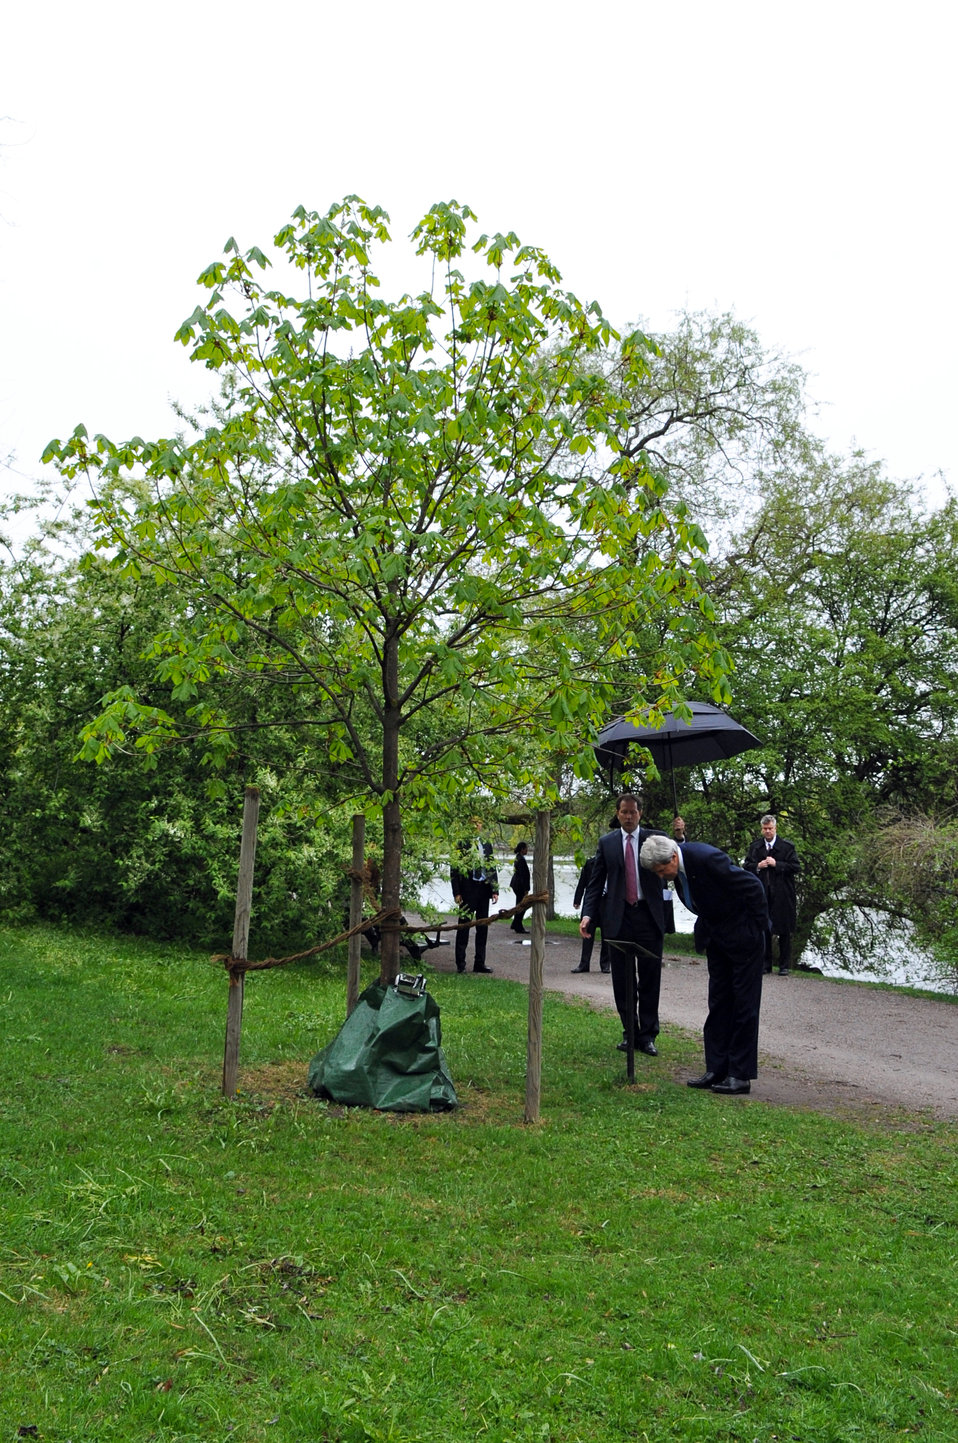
Ambassador Brzezinski Shows Secretary Kerry the Wallenberg Memorial Tree

U.S. Ambassador to Sweden Mark Brzezinski shows U.S. Secretary of State John Kerry the tree planted in memory of Raoul Wallenberg, the Swedish diplomat who saved thousands of Jews from the Holocaust, on May 14, 2013.